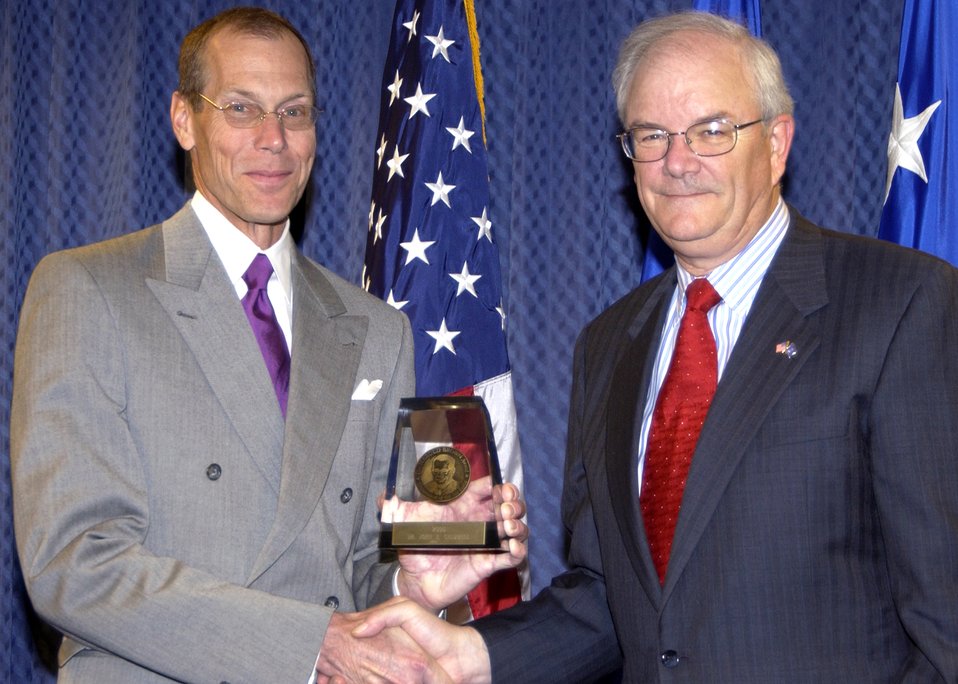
Psychologist receives Harold Brown Award

Dr. John Caldwell (left) receives the 2005 Harold Brown Award from Secretary of the Air Force Michael W. Wynne during a Pentagon ceremony on Thursday, May 4, 2006. Dr. Caldwell was recognized for his research on the effects of fatigue and how Air Force pilots can counter it.